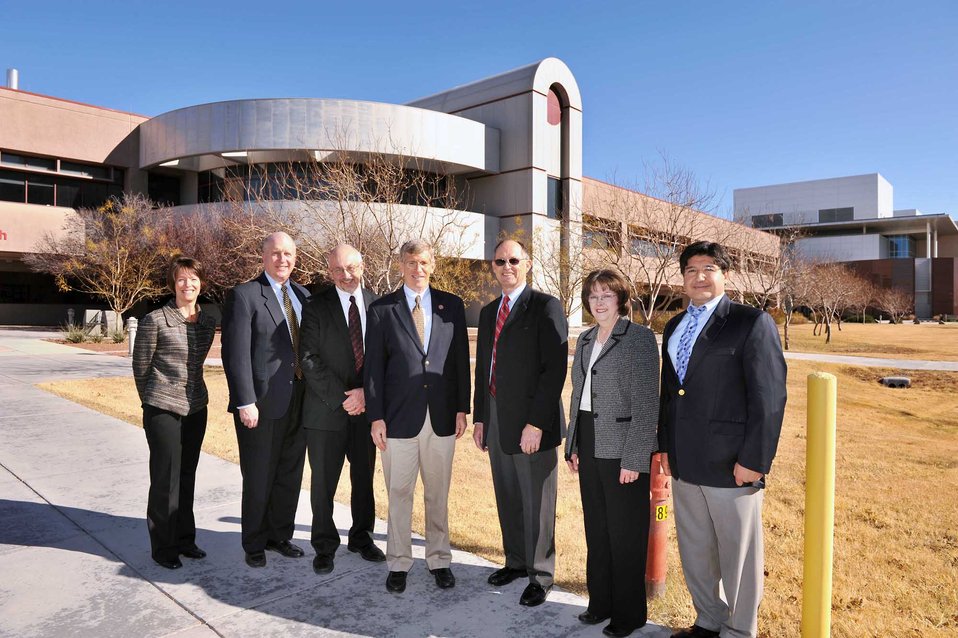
Deputy Secretary Poneman tours Sandia National Laboratories.